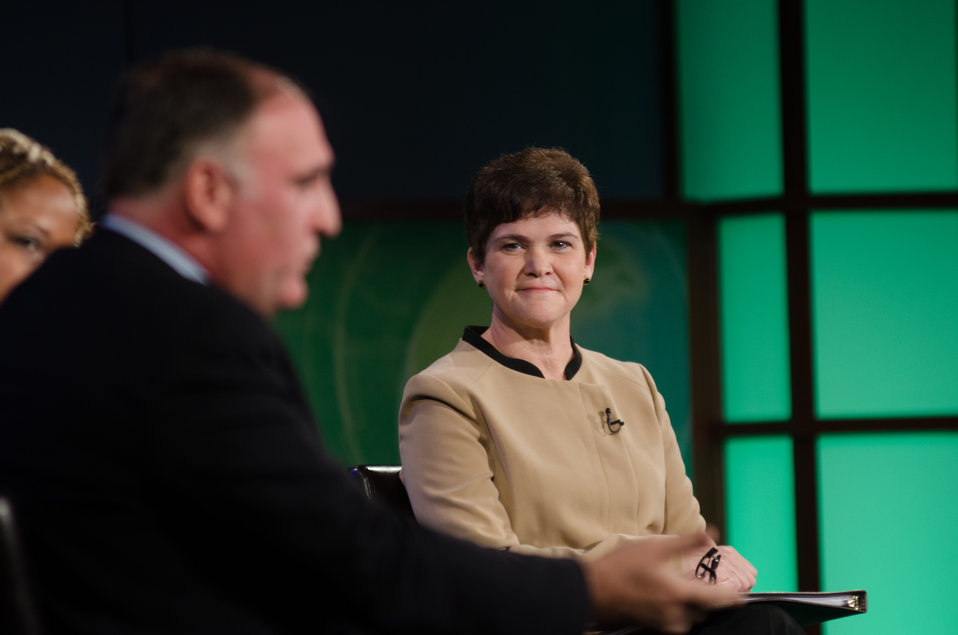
Krysta Harden, Deputy Secretary of Agriculture, listen to Jose Andres, Chef/Owner of ThinkFoodGroup, Founder of World Central Kitchen, and Culinary Creator and Advocate on the discussion panel “Policy, Palate, and the Plate-Innovation and how policy can impact practice at the Feeding the Planet Summit of leaders from agriculture, business, finance, academia, Non Governmental Organization, government and media, along with a large contingent of college students to engage around promising innovations in global agriculture and food security. The Summit spotlights transformation and scalable developments in policy, practices and technologies with special attention to related issues of gender, climate change and urbanization at The George Washington University in Washington, DC, on Wednesday, Oct. 31, 2013.